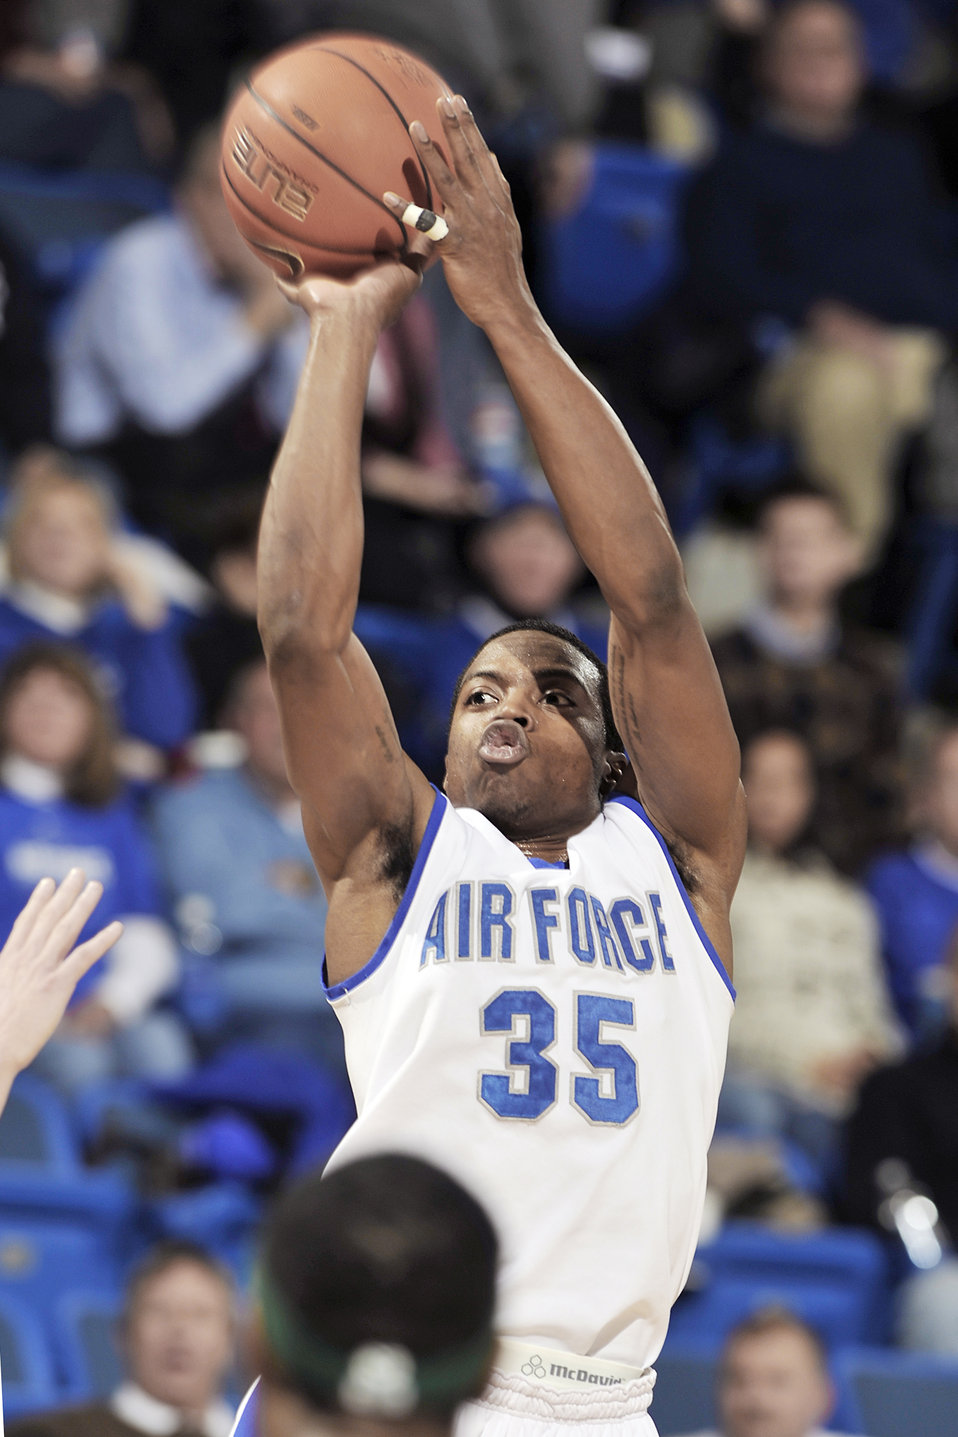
Colorado State beat Falcons

Falcon junior guard Evan Washington attempts a 3-pointer at the buzzer as Colorado State beat Air Force 51-47 at the U.S. Air Force Academy's Clune Arena Feb. 9, 2010. The Falcons are 9-14 overall and 1-9 in the Mountain West Conference.